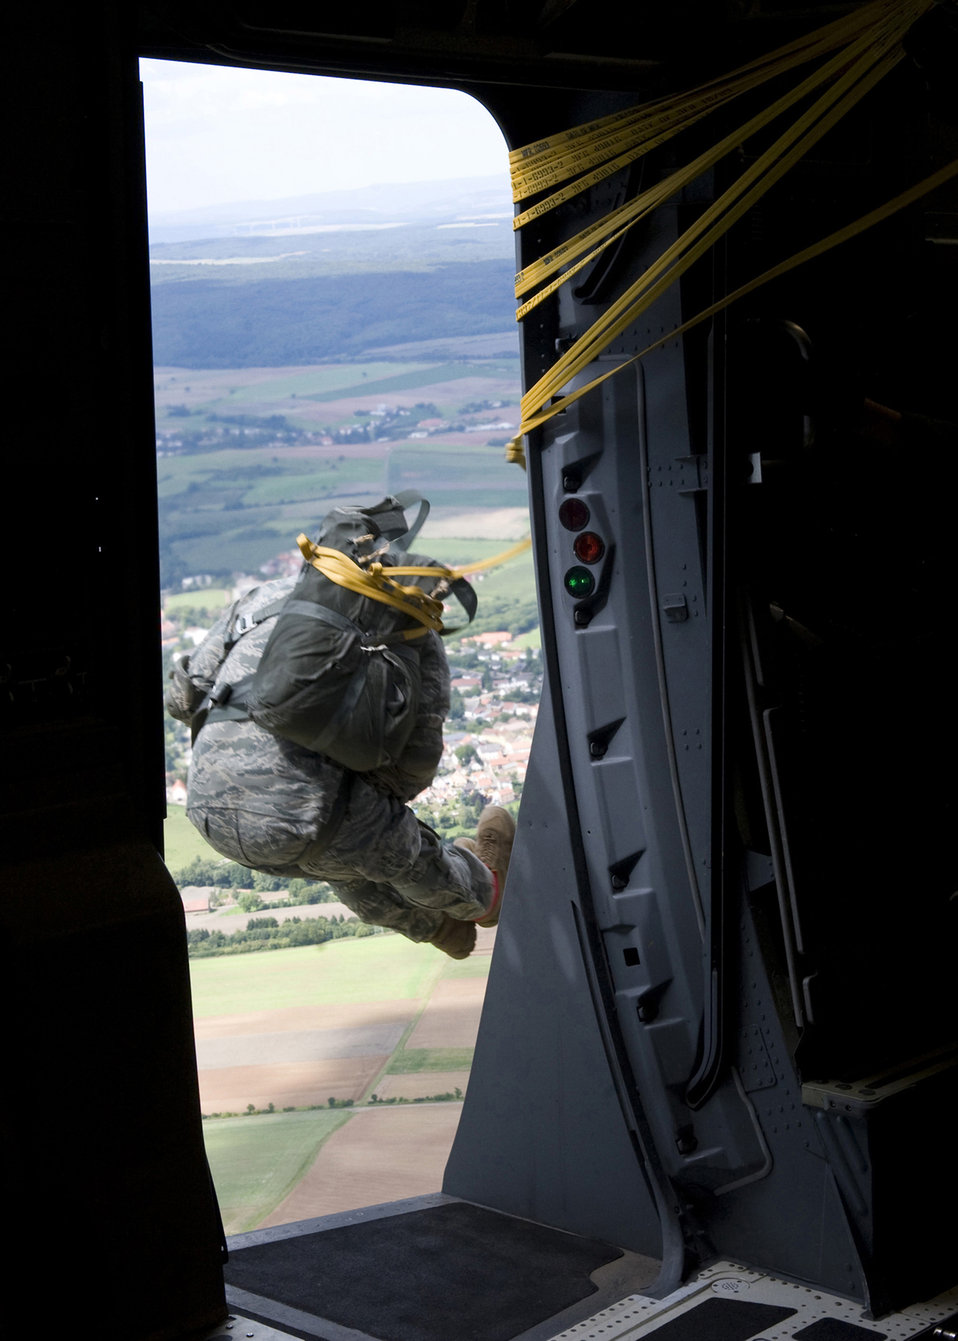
Auf wiedersehen

In support of International Jump Week 2011, U.S. military members, along with soldiers from six other NATO nations, parachute from a C-17 Globemaster III over Marnheim, Germany, Aug. 10, 2011. International Jump week included more than 200 military jumpers from the U.S., Germany, United Kingdom, Italy, Denmark and Netherlands. The NATO countries participated in the jump in an effort to learn from their coalition partners and strengthen working relationships.